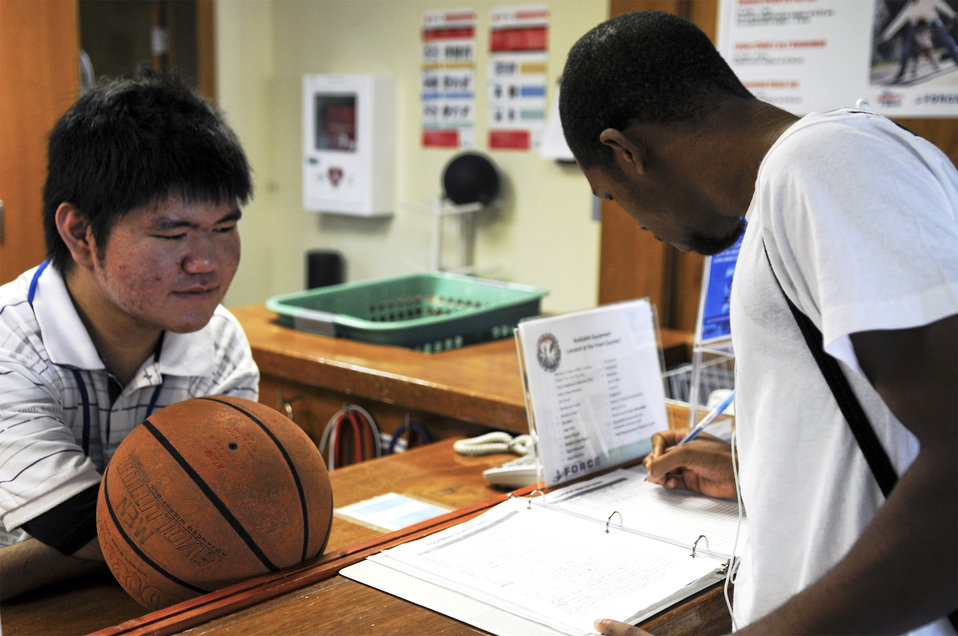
Okinawan intern hones English skills

Ryo Oshiro checks out a basketball to a customer June 14, 2011, at Kadena Air Base, Japan. Ryo is a student from Kagamigaoka Special Education School in Okinawa, Japan. He works as an intern at the fitness center at Kadena AB.